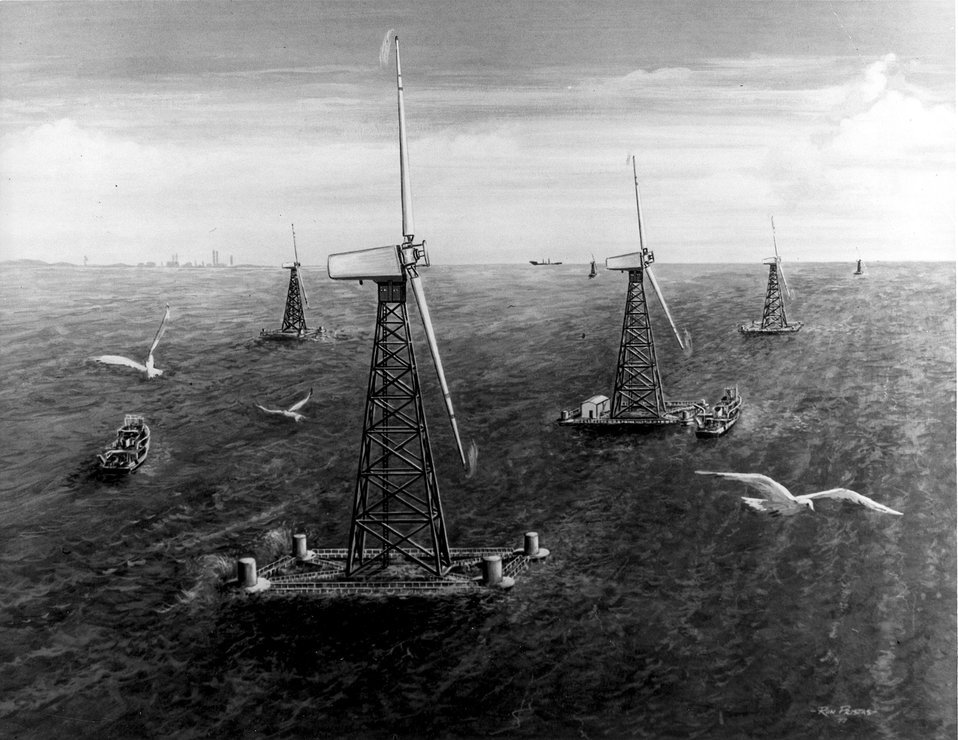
Some day there may be groups of large wind energy conversion systems in offshore areas near U.S. coastlines. c. 1977